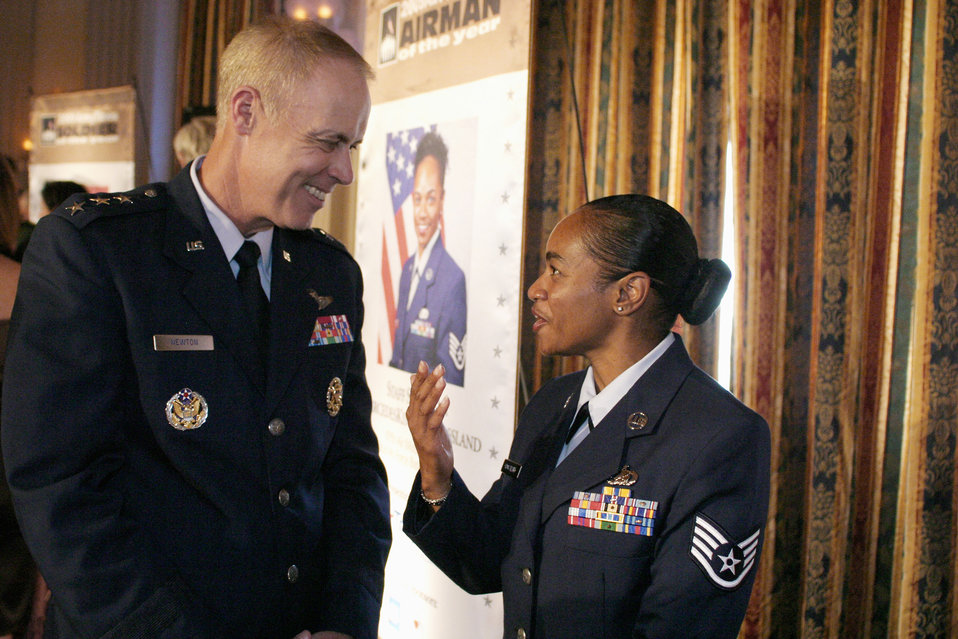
Military Times Service Member of the Year

Lt. Gen. Richard Y. Newton III, the Air Force deputy chief of staff for manpower, personnel and services, joined civilian and military dignitaries in recognizing service members chosen by Army Times Publishing Company and other corporate sponsors for their Service Members of the Year awards. Staff Sgt. MercedesKimble L. Crossland earned the 2009 Air Force Times Airman of the Year award, attending the ceremony July 9 on Capitol Hill.